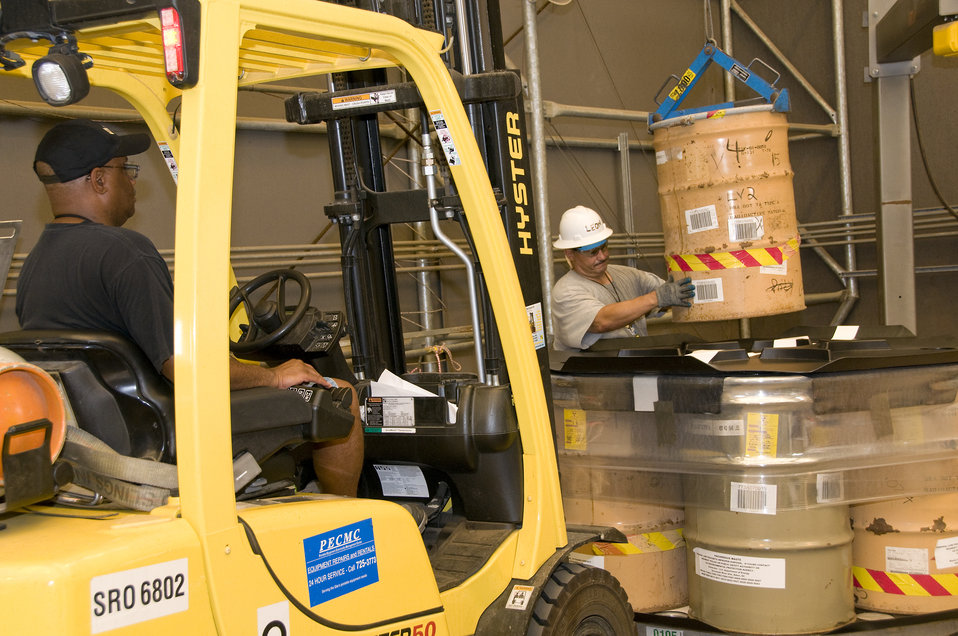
Recovery Act Worker

A Recovery Act worker handles a drum containing legacy transuranic waste at the Savannah River Site.